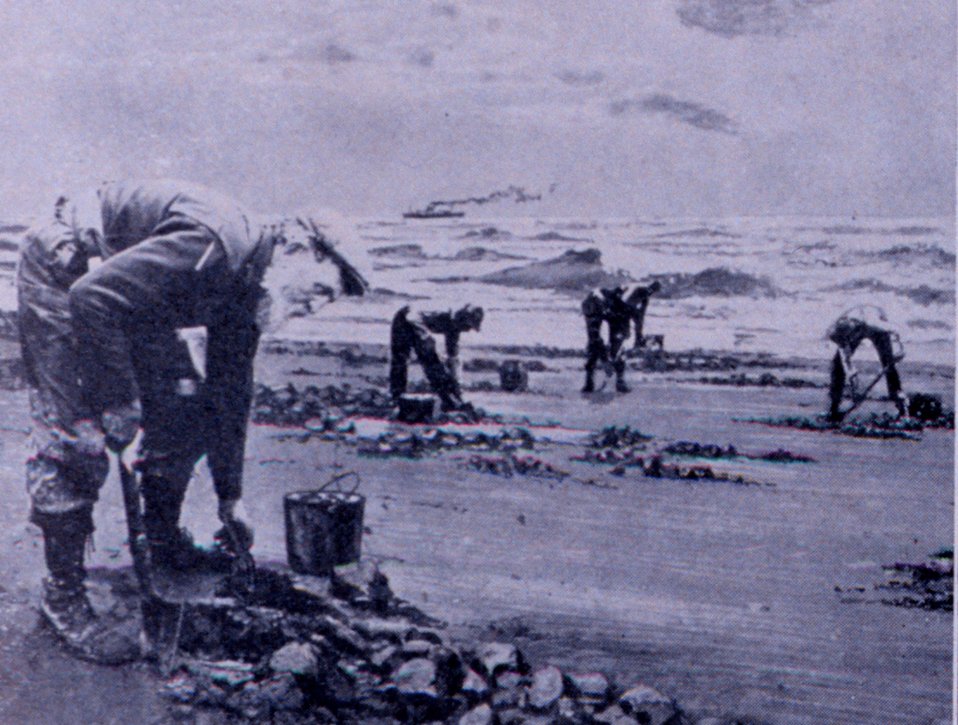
'Digging Razor Clams at Copalis.' In: 'Puget Sound and Western Washington Cities-Towns Scenery', by Robert A. Reid, Robert A. Reid Publisher, Seattle, 1912. P. 159.